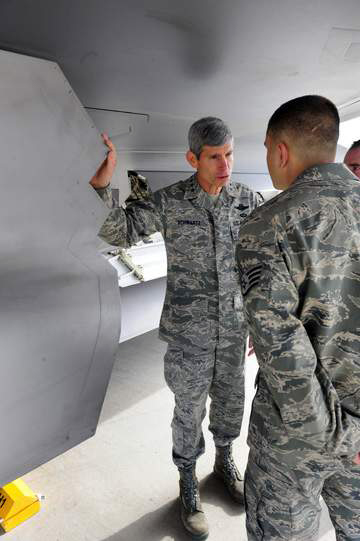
Holloman visit by chief of staff highlights contributions of America's Airmen

Air Force Chief of Staff Gen. Norton Schwartz speaks with an F-22 Raptor crew chief Jan. 27, 27, 2010, at Holloman Air Force Base, N.M. General Schwartz visited Holloman AFB to see Airmen and operations firsthand.